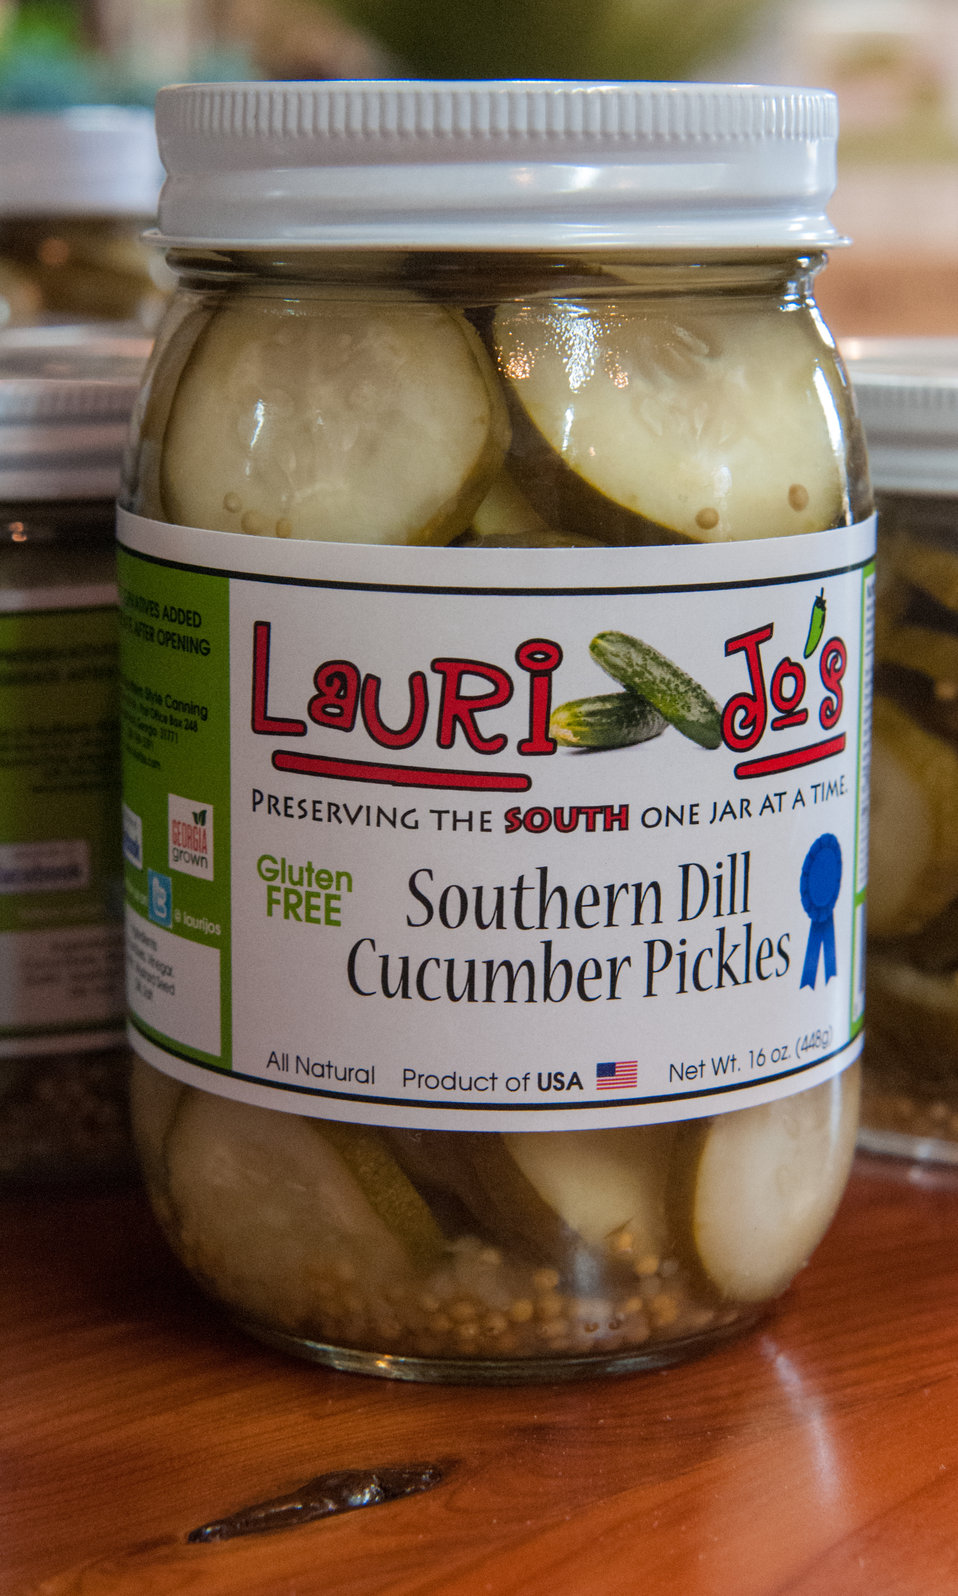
Jar of Southern Dill Cucumber Pickles sits on the shelf at Laurie Jo’s Southern Style Canning business in Norman Park, Colquitt County, GA on Mar. 7, 2013. The business has increased its production to 12 items that now includes pickled green tomatoes, pickled okra, pickled asparagus pickled green beans, red and green pepper jellies, pineapple pepper jelly salsa and pepper sauce. Consumers may now purchase Lauri Jo’s Southern Style Canning Line in Whole Foods, Earth Fare and Kroger stores across 20 states. Lauri Jo Bennett applied for a U.S. Department of Agriculture (USDA) Rural Development (RD) Rural Business Enterprise Grant (RBEG) to help market her products. The grant from USDA has enable Lauri Jo to employ 26 people. The USDA Strike Force Initiative has designated Colquitt County, GA as a Strike Force county selected to receive assistance to relieve persistent poverty in historically high-poverty counties.